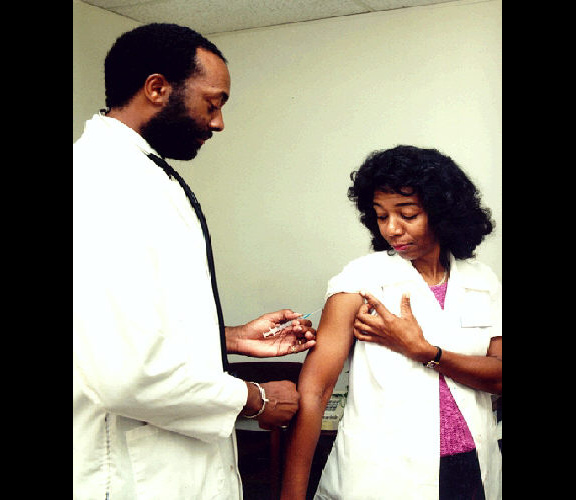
Adult immunization.